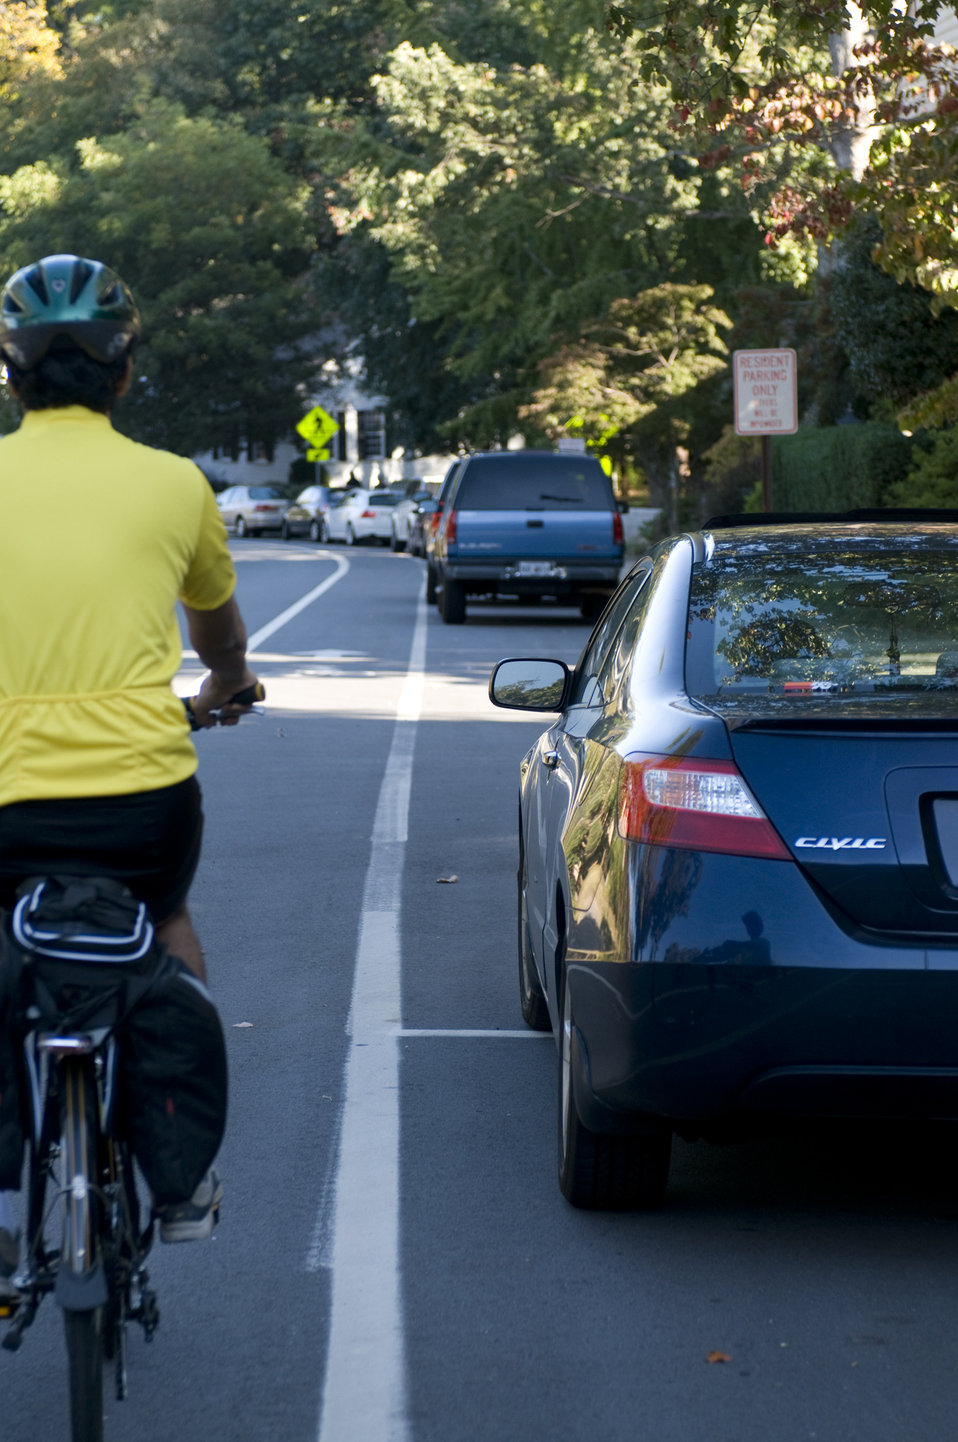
Photographed on a sunny Georgia day was a male bicyclist who had embarked on a morning bicycle ride. Note the brightly-colored shirt he was wearing, which would help drivers see him more easily, as well as the protective, aerodynamic helmet, and the snug leggings, all adding to an overall safer bike ride. Also important, is that he was riding in the designated bicycle traffic lane, and abiding by the proper rules of the road, which govern drivers of both bicycles, and motorized vehicles.